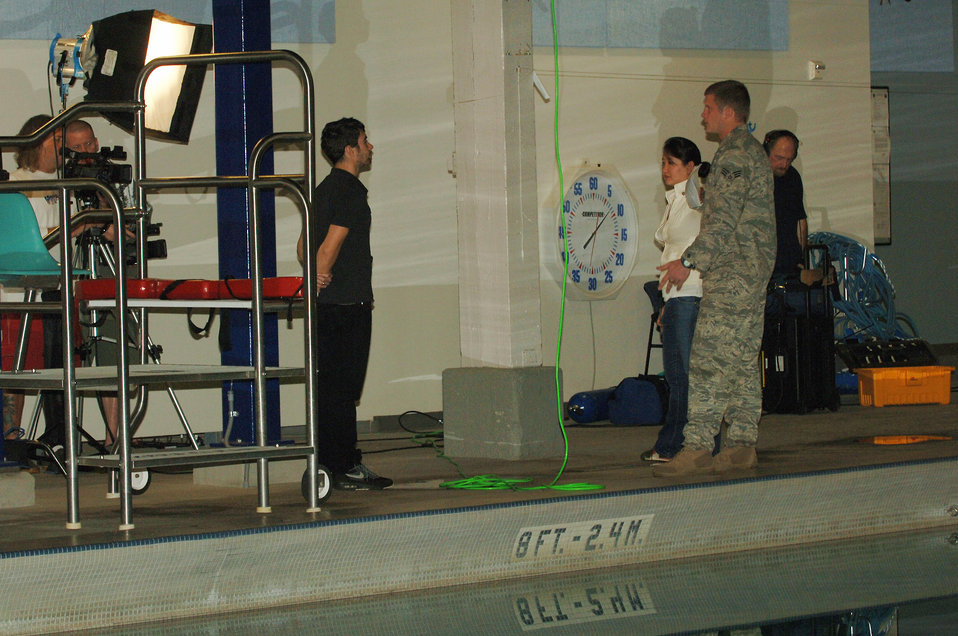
MTV visits Fairchild Air Force Base

Senior Airman Ethan Jago listens to instructions from the MTV crew before filming begins Nov. 18 at the aquatic center at Fairchild Air Force Base, Wash. The MTV crew was at Fairchild to film several episodes for the